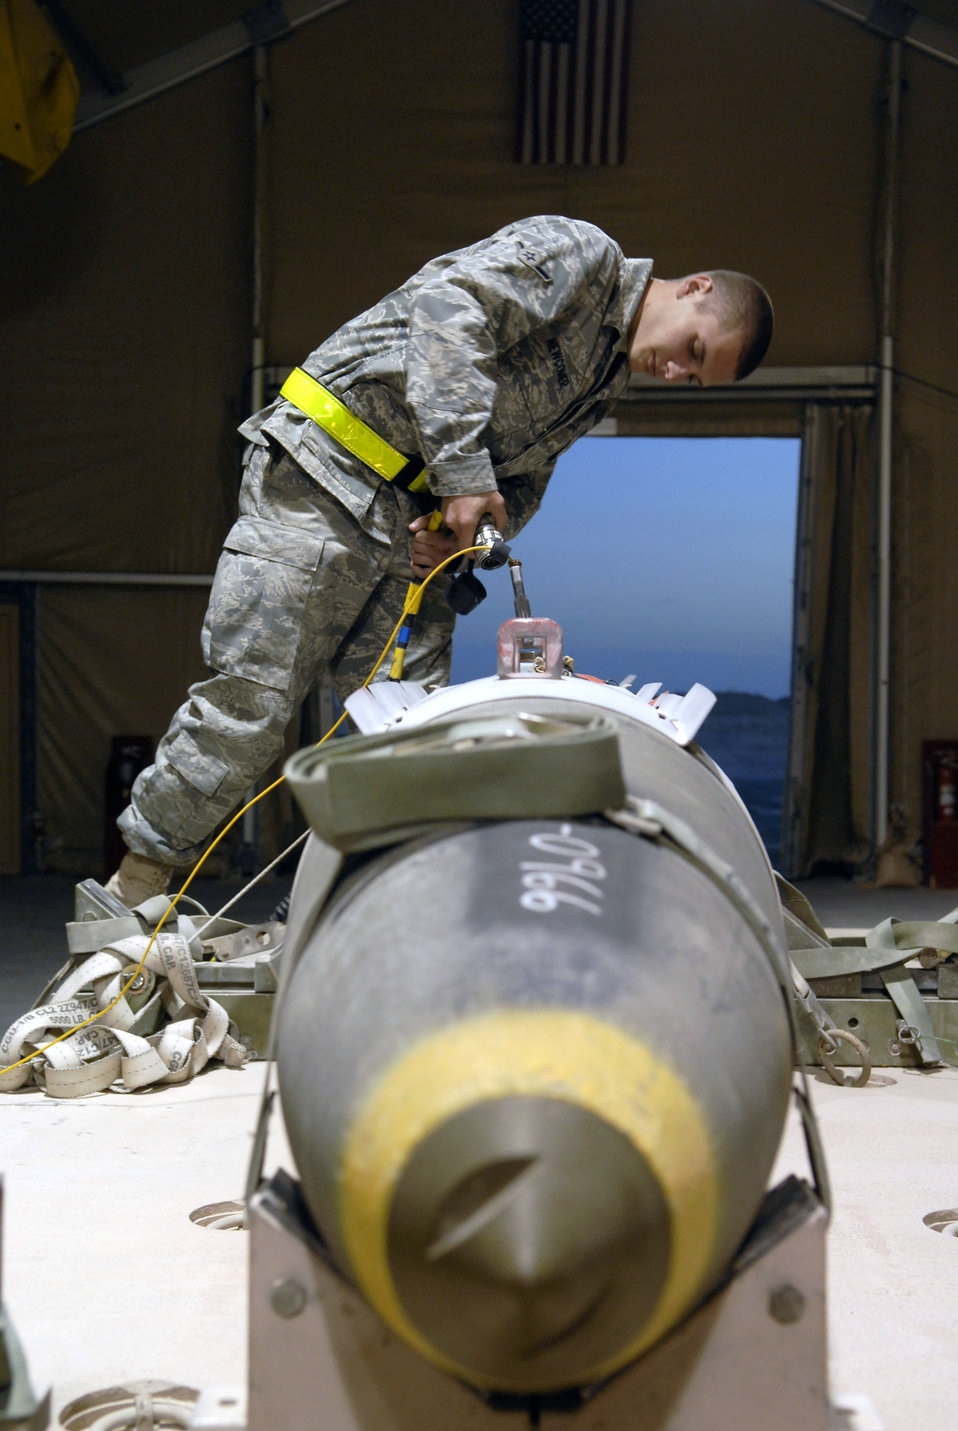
Heavy metal

Airman Bryan Newcomer checks the convention ammunitions bit reprogramming equipment on the tail kit of a guided bomb unit-31 Feb. 3 at an air base in Southwest Asia. Airman Newcomer hails from Suwanee, Ga., and is deployed from Dyess Air Force Base, Texas. Airman Newcomer is a 379th Expeditionary Maintenance Squadron ammunitions systems apprentice.